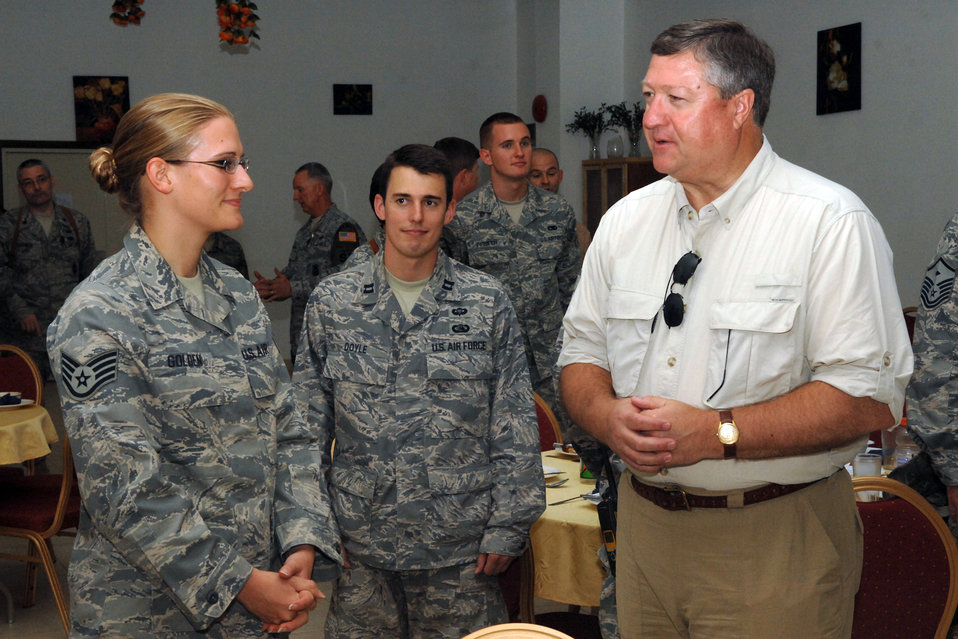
SECAF visits Kirkuk

Staff Sgt. Rachel Golden, a 506th Expeditionary Communications Squadron communications technician at Kirkuk Regional Air Base, Iraq, talks to Secretary of the Air Force Michael Donley during his visit here Oct. 14. The secretary toured various facilities and spoke to Airmen about his vision for the overall mission within the Southwest Asia AOR and the future of the Air Force. Sergeant Golden is deployed from Spokane International Airport Geiger Field, Spokane, Wash.